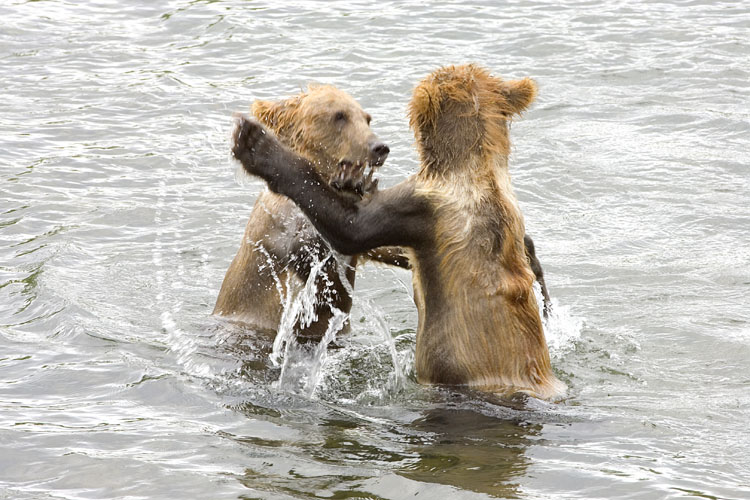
Wildlife of Kodiak Refuge

Playful Kodiak Bears